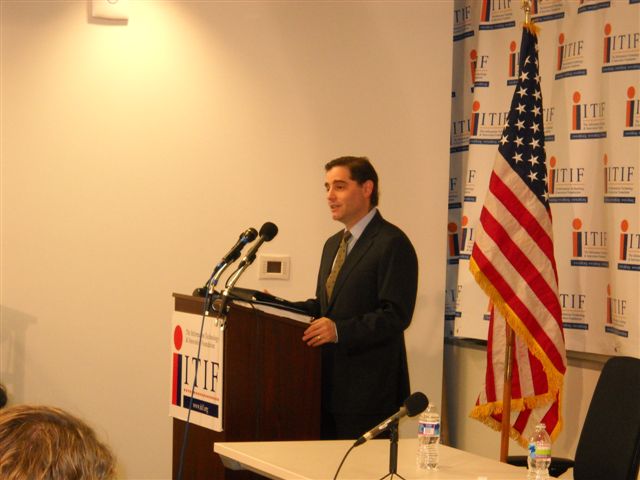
Universal Service Fund Reform at ITIF

Chairman Julius Genachowski made remarks on the urgent need for Universal Service Fund reform. February 7, 2011 at ITIF in Washington, D.C.